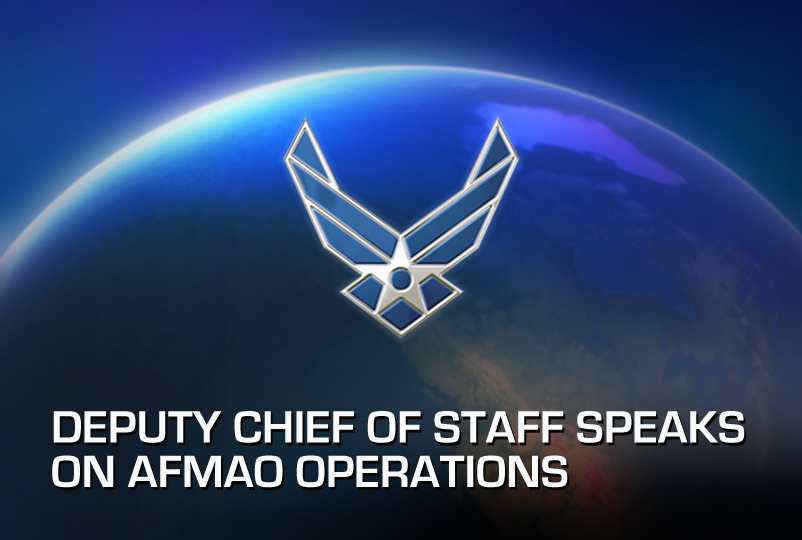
Deputy Chief of Staff speaks on AFMAO operations